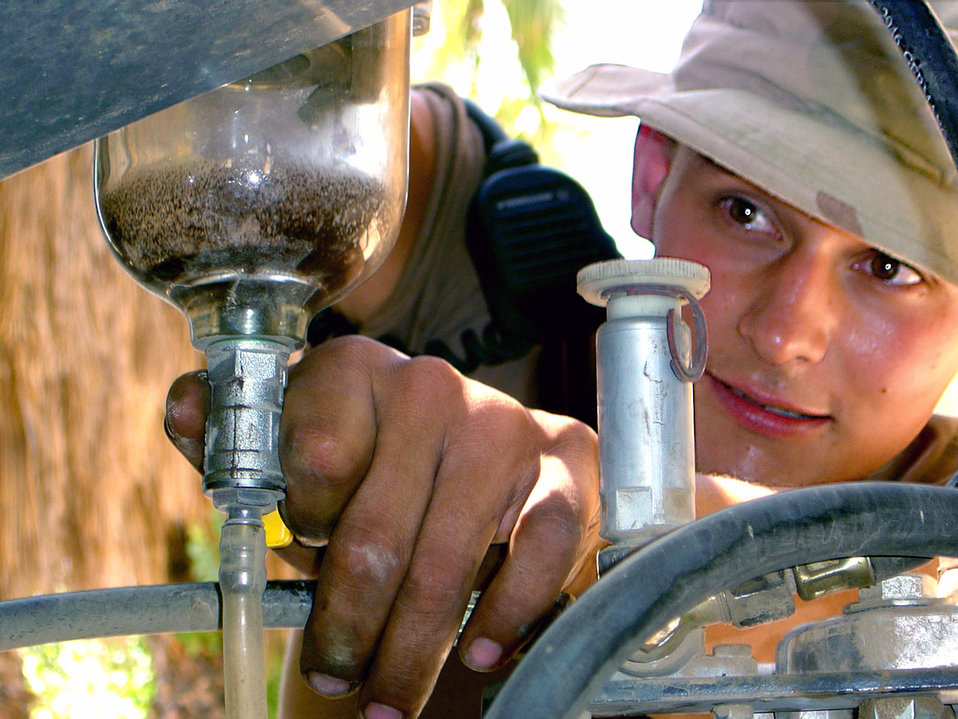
Rinella

KIRKUK AIR BASE, Iraq -- Airman 1st Class Robert Rinella works on a generator used to provide electricity. Rinella is deployed to the 506th Expeditionary Civil Engineer Squadron here supporting Operation Iraqi Freedom.